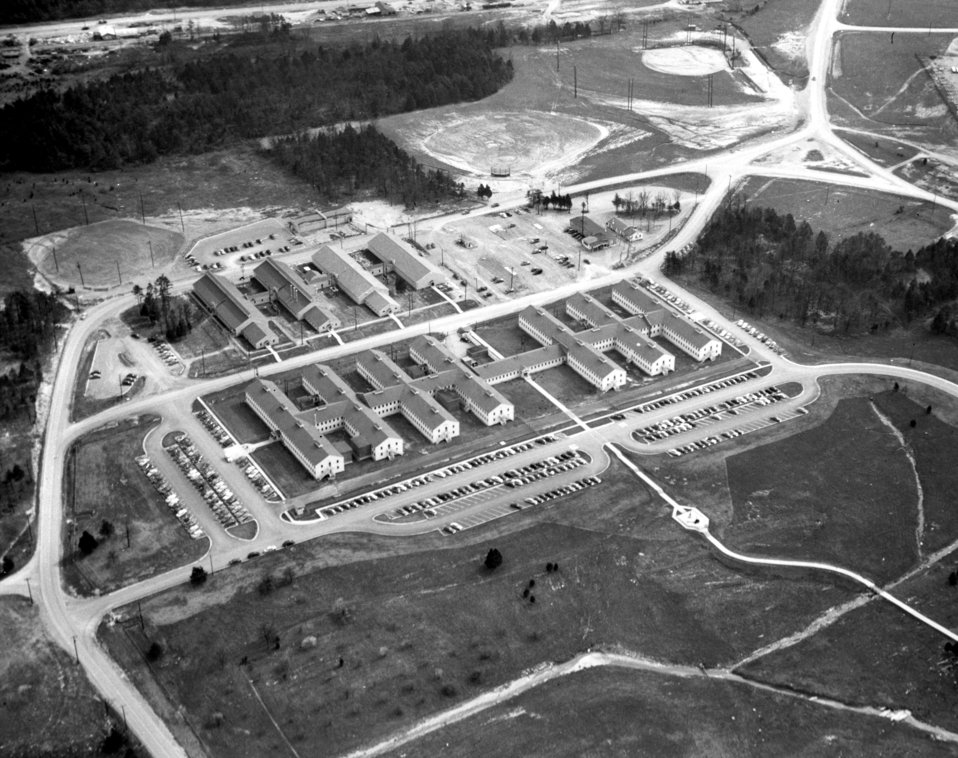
Aeiral View of AEC Administration Bldg. Oak Ridge 1950

6335 DOE photo Ed Westcott 4-1950 Oak Ridge tennessee